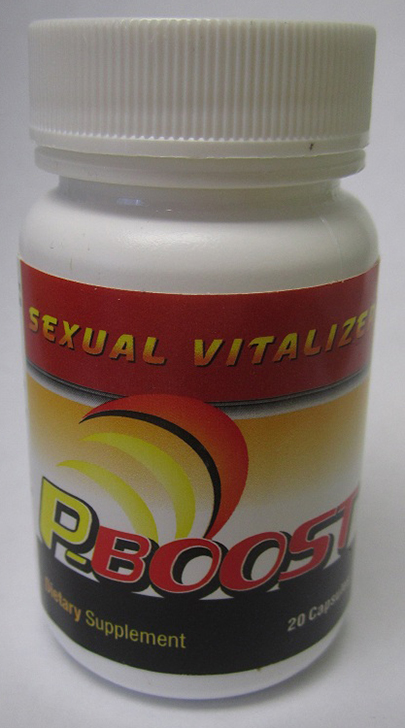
RECALLED – Dietary Supplements

November 19, 2013 – Product Recall – Tendex Issues Voluntary Nationwide Recall of P-Boost, NatuRECT Due to Undeclared Active Ingredients. For additional information, please refer to the company issued press release available on FDA’s web site at www.fda.gov/Safety/Recalls/ucm375815.

And read this Consumer Update: Beware of Fraudulent ‘Dietary Supplements’